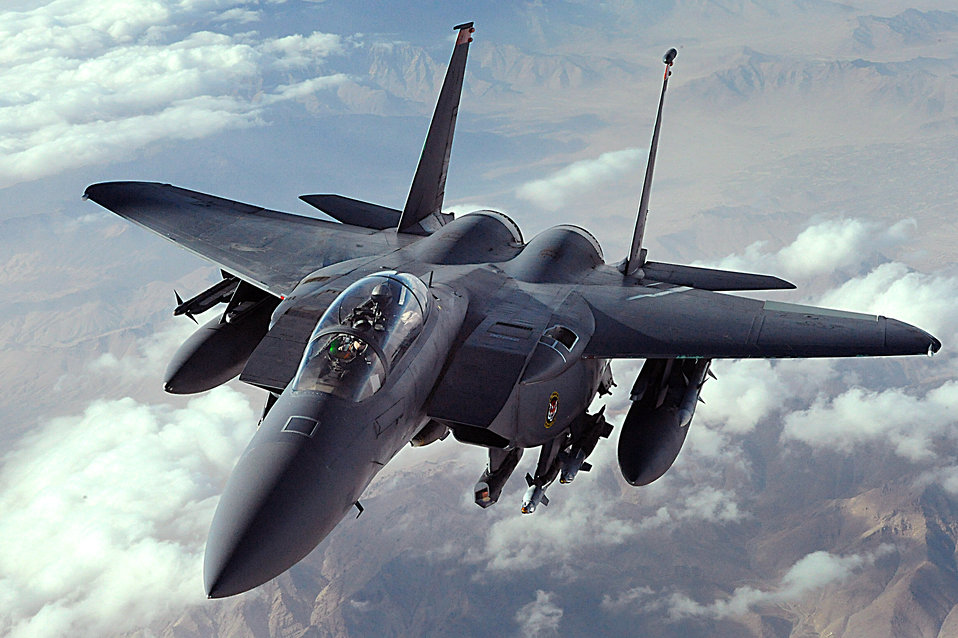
Dec. 21 airpower summary: F-15Es deter anti-Afghan forces

An F-15E Strike Eagle flies a combat mission over Afghanistan in support of Operations Enduring Freedom. The Strike Eagle is a dual-role fighter designed to perform air-to-air and air-to-ground missions.